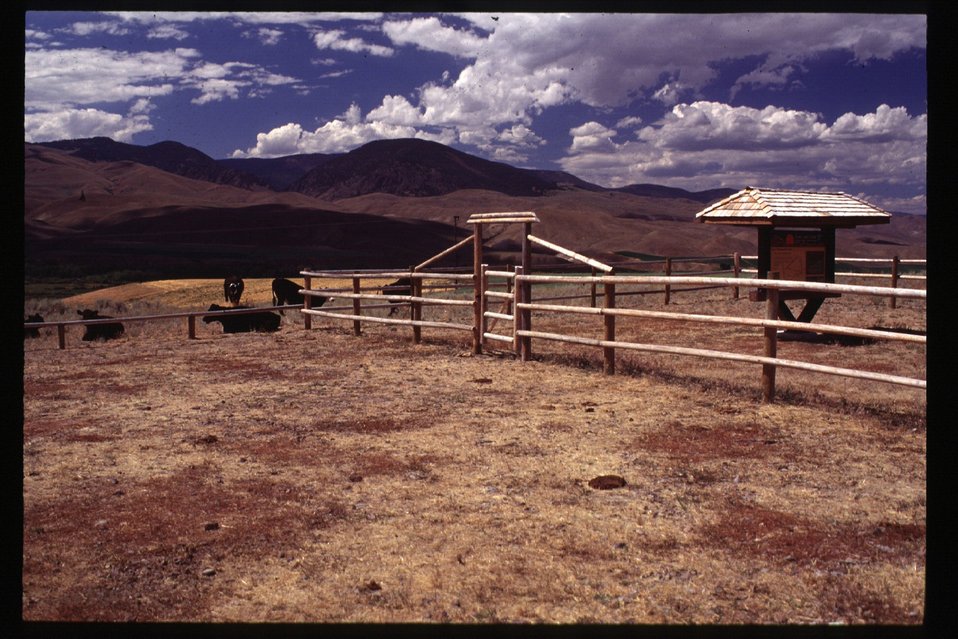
Informational Sign Lewis and Clark National Historic Trail Salmon Field Office UCSC Upper Columbia Salmon Clearwater